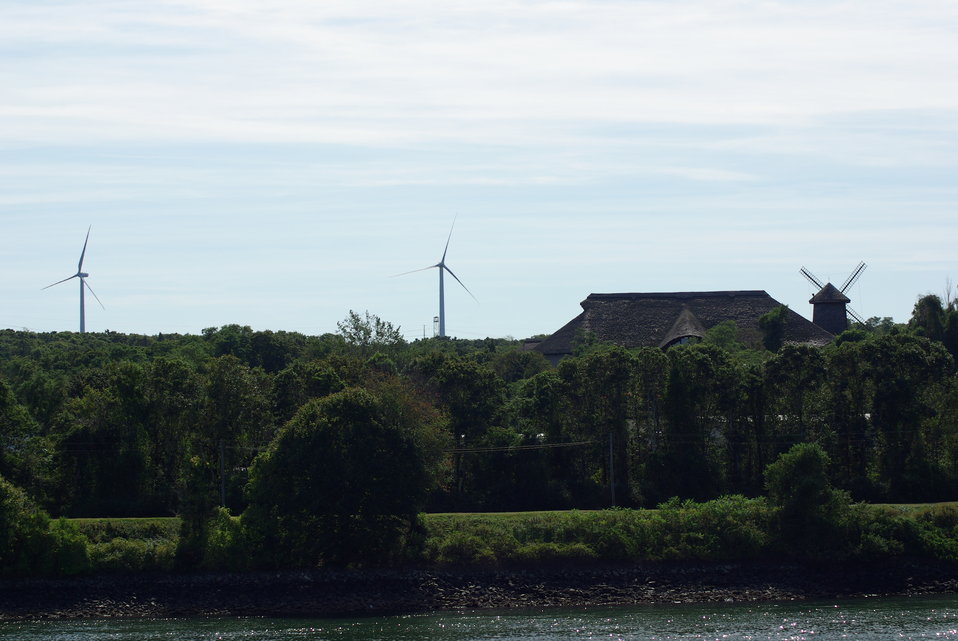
New wind turbines help Air Force go green

The Air Force's two new wind turbines at the Massachusetts
Military Reservation in Cape Cod, Mass., seen from a distance, pose an
interesting contrast to an ornamental traditional windmill atop a local Cape
Cod shop. The 1.5 megawatt wind turbines, in addition to an existing
turbine, were built to offset electrical costs for powering numerous
groundwater cleanup systems at the reservation. The turbines will pay for
all the Air Force's electric needs for groundwater remediation at MMR,
saving more than $1.5 million per year.